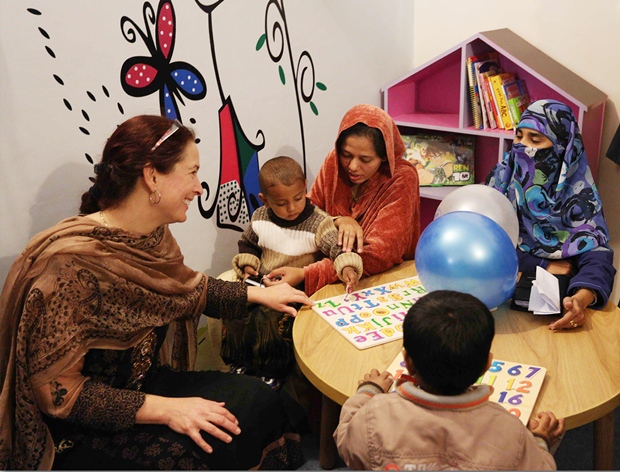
The United States Supports a Day Care Center at MEPCO

The U.S. Agency for International Development (USAID) Energy Office Director Ms. Melissa Knight visits MEPCO daycare center.